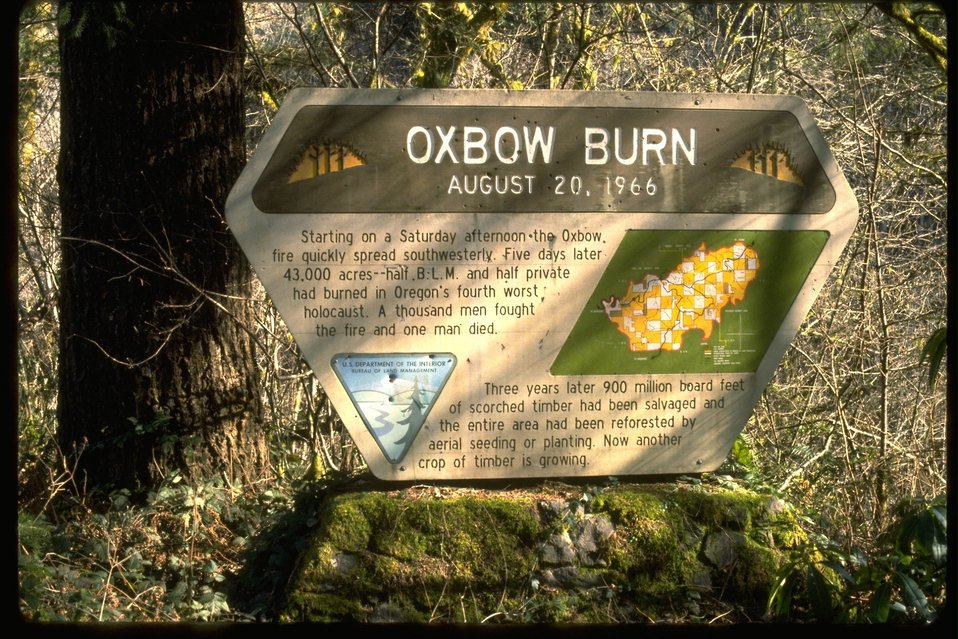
Oxbow burn sign.